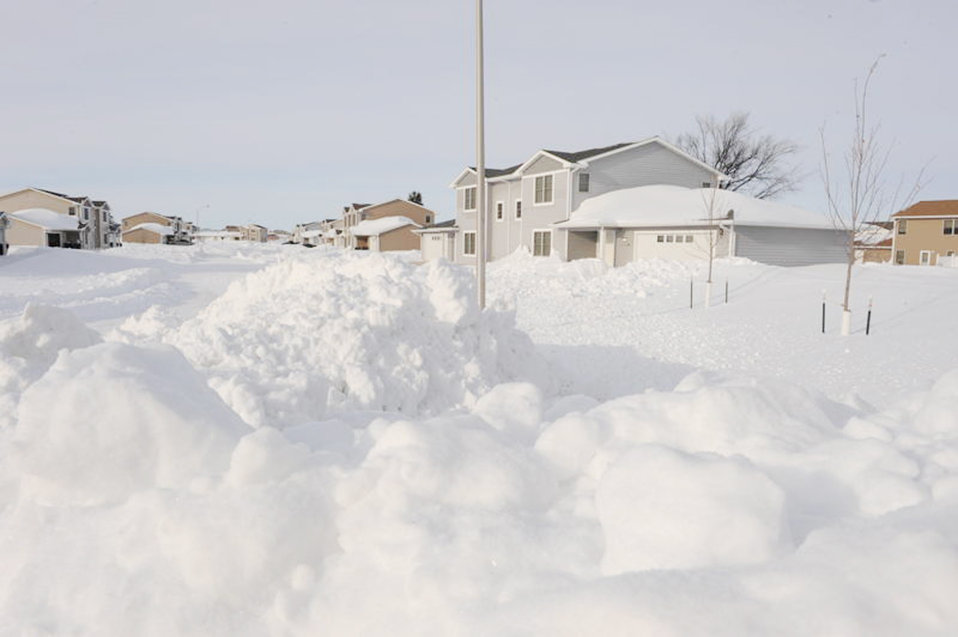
Minot residents weather blizzard, continue mission

Snow piled up in front of housing Dec. 29, 2009 at Minot Air Force Base, N.D. A Christmas weekend blizzard resulted in 25.7 inches of snow.